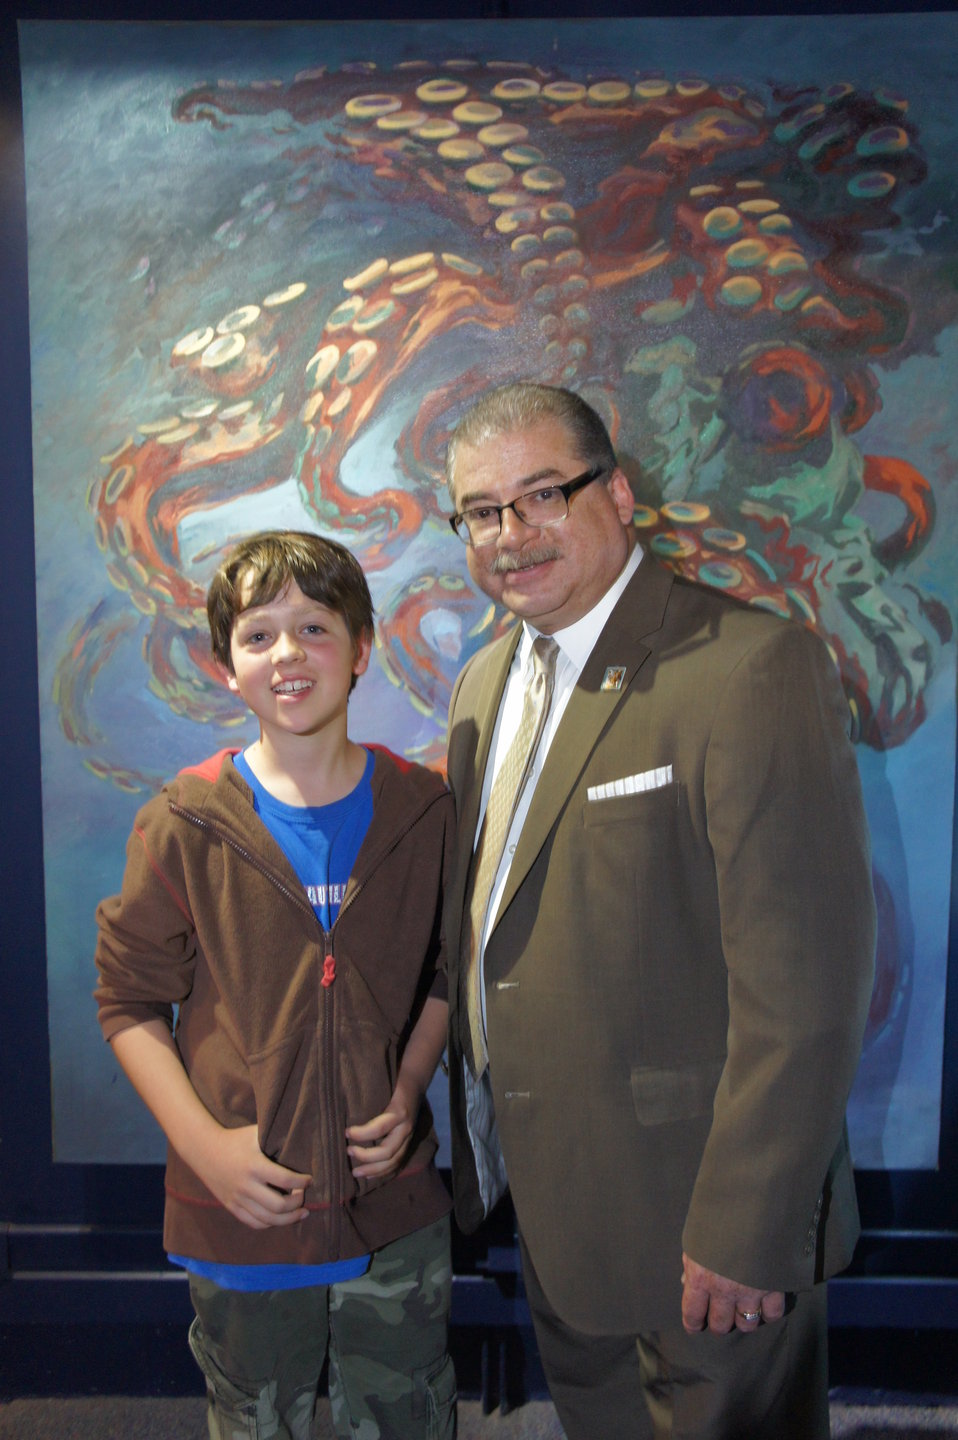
'Save the Nautilus' co-founder visits Smithsonian National Zoo

U.S. Fish & Wildlife Service Assistant Director of International Affairs, Bryan Arroyo, meets with Josiah Utsch, co-founder of www.savethenautilus.com, to thank him for his conservation work.